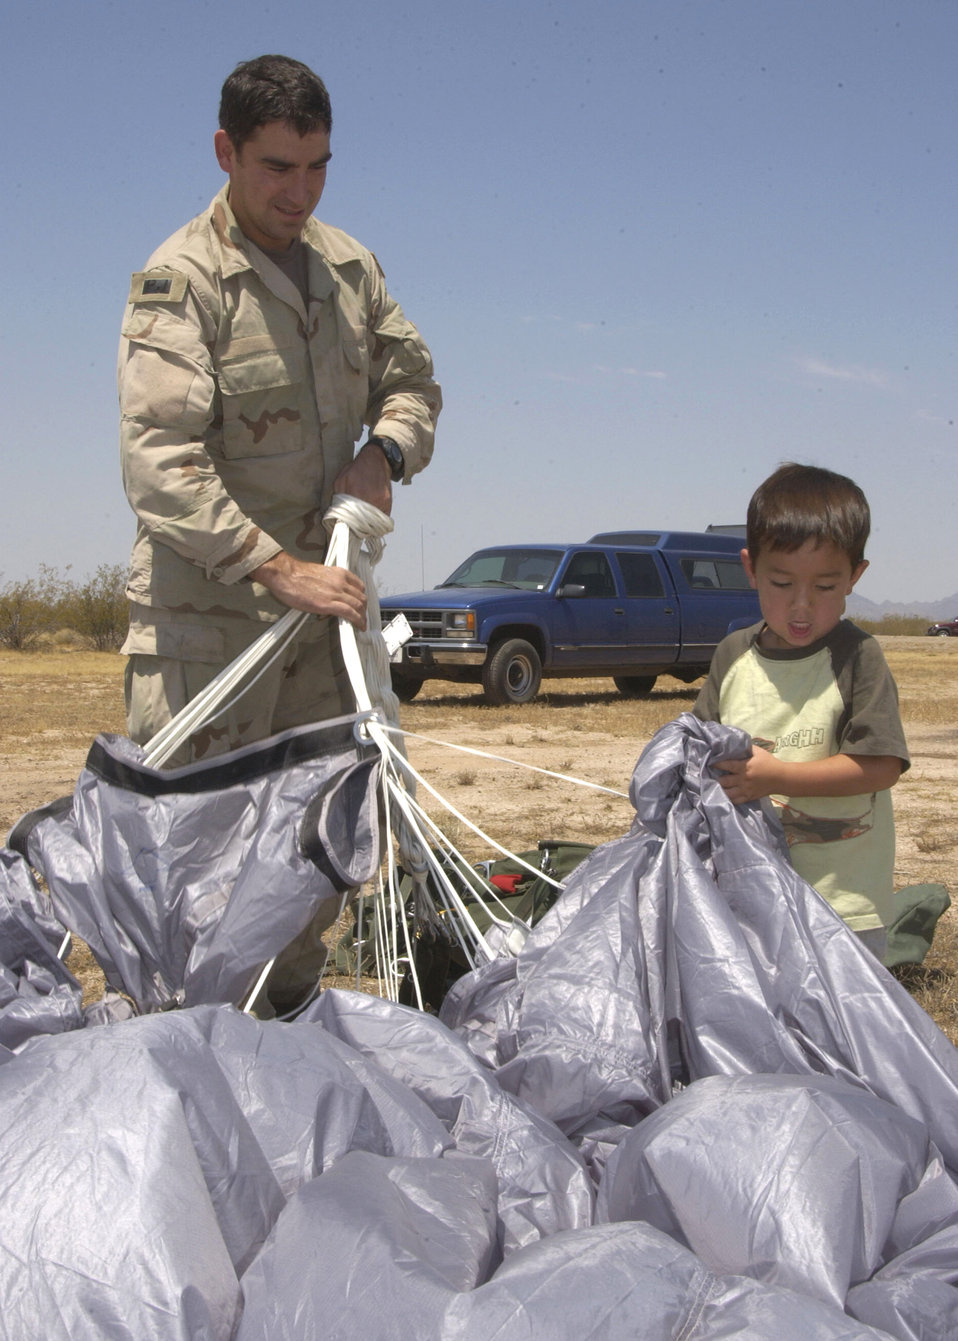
Enjoying the ride

DAVIS-MONTHAN AIR FORCE BASE, Ariz. -- Tech. Sgt. Paul Schultz gets a little help from his son, Paul, while retrieving his parachute after completing a high-altitude low-opening jump here. He is a pararescueman assigned to the 306th Rescue Squadron.